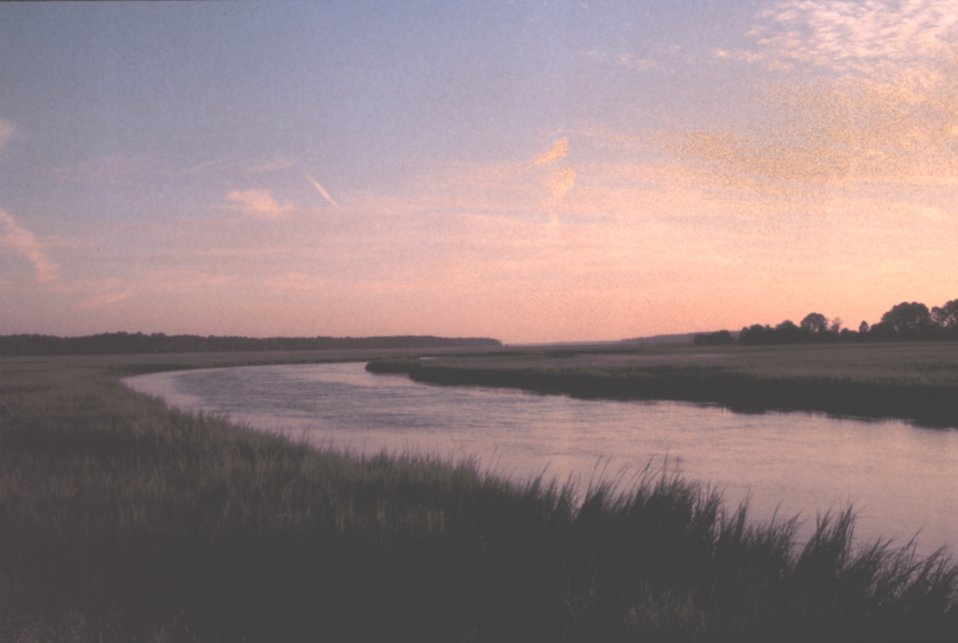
Sunrise over the salt marsh.